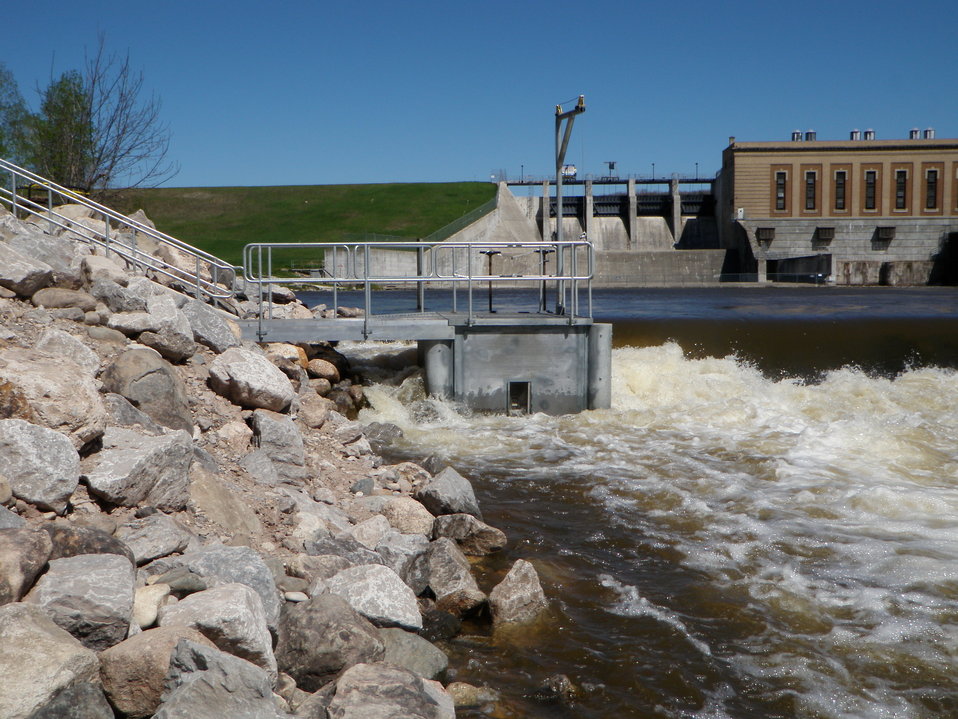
Big Manistee River Sea Lamprey Trap, Michigan.